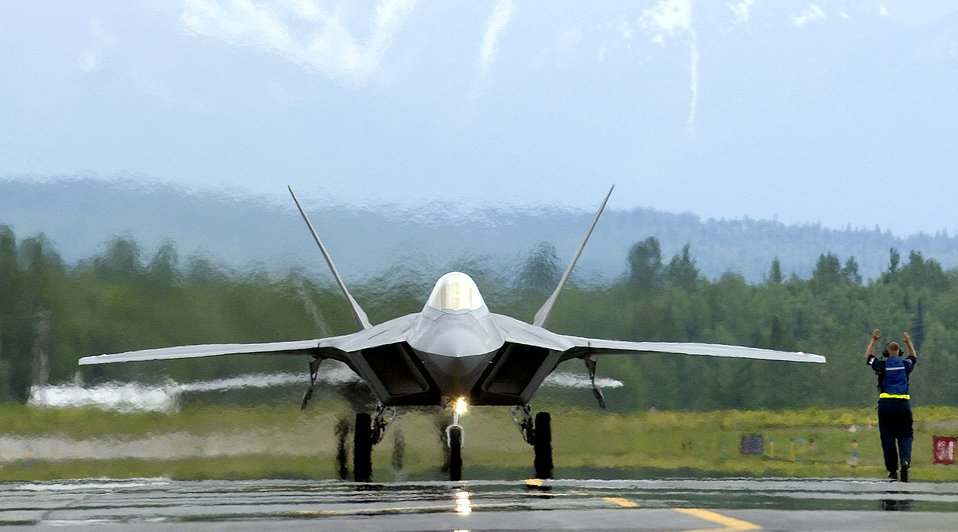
Northern Edge aims for air, sea dominance

A crew chief with the 1st Fighter Wing from Langley Air Force Base, Va., directs an F-22 Raptor as it taxis down the runway after completion of its mission during Exercise Northern Edge 2006, on Wednesday, June 7, 2006. The joint training exercise, which runs from June 5 to 16 and is hosted by Alaskan Command, is one of a series of U.S. Pacific Command exercises that prepare joint forces to respond to crises in the Asian Pacific region.